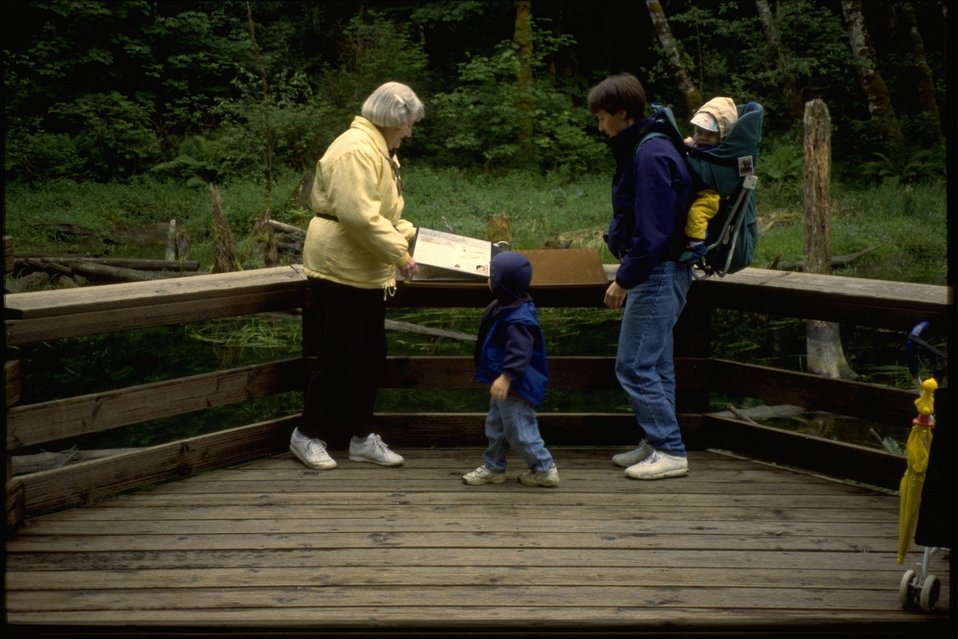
Visitors reading an interpretive panel. (Boardwalk interpretive panels.)